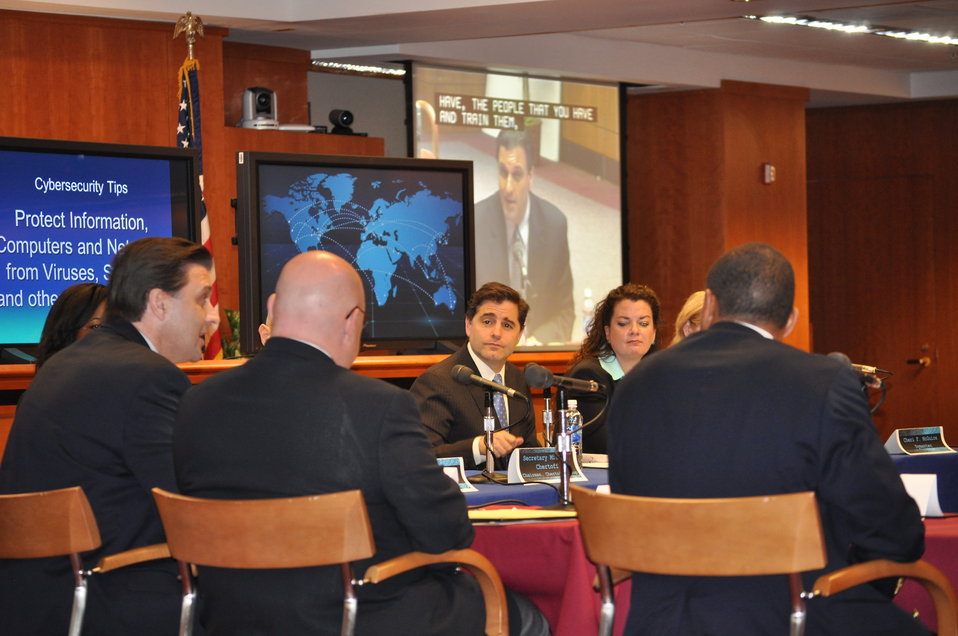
Cybersecurity 5-16

Cybersecurity for Small Business Roundtable; May 16, 2011